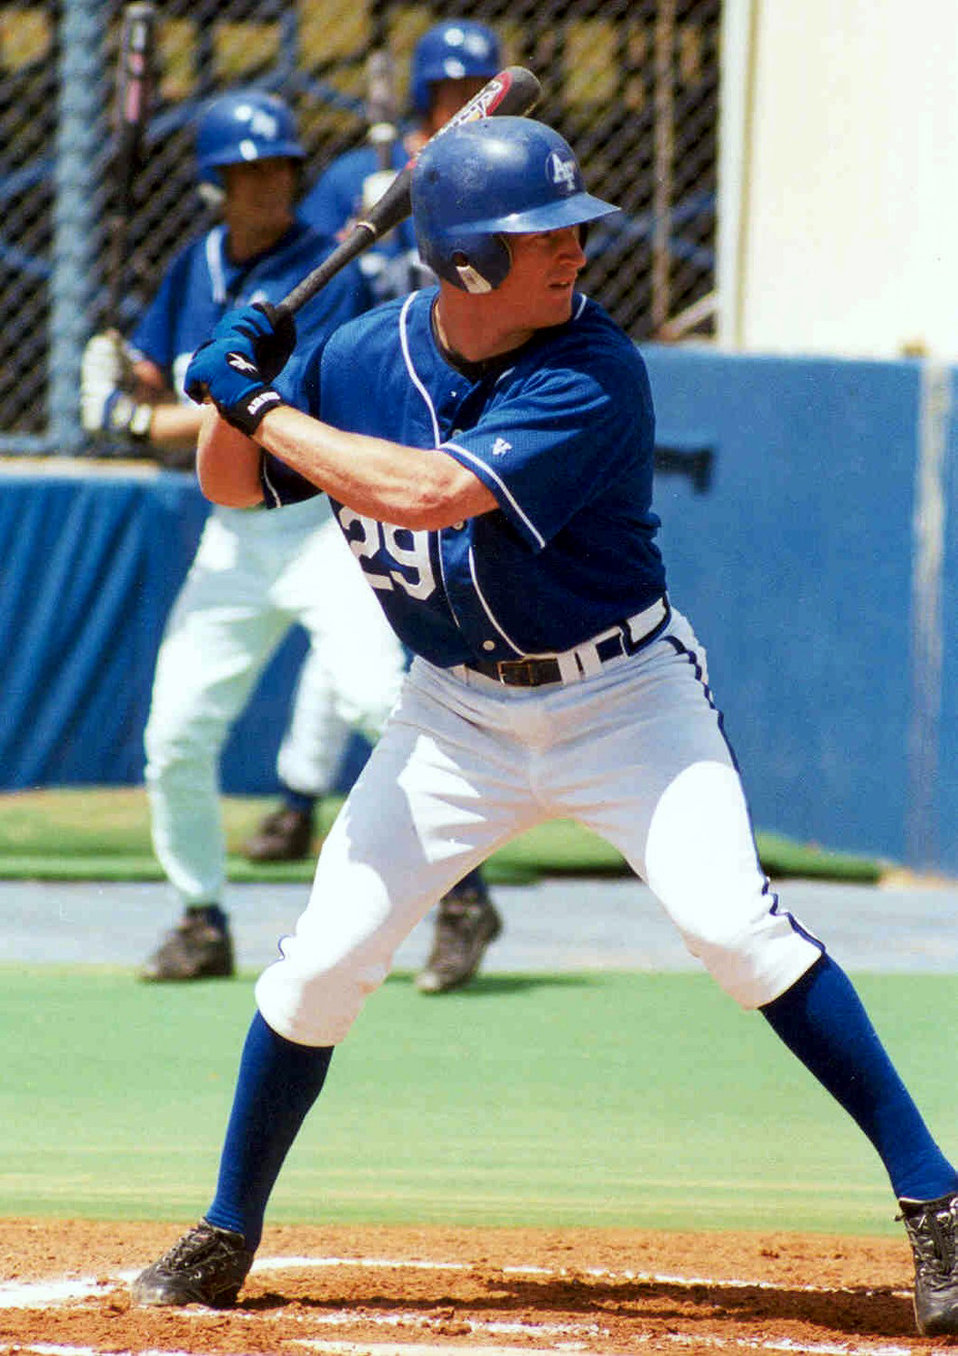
Airman to play for Diamondbacks' farm team

AIR FORCE ACADEMY, Colo. -- Michael Thiessen bats during a baseball game at the Air Force Academy during his junior year. Currently a second lieutenant, he plays baseball for the El Paso Diablos, a AA team in the Arizona Diamondbacks' Texas league farm system.